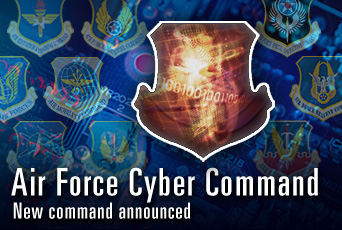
8th Air Force to become new cyber command